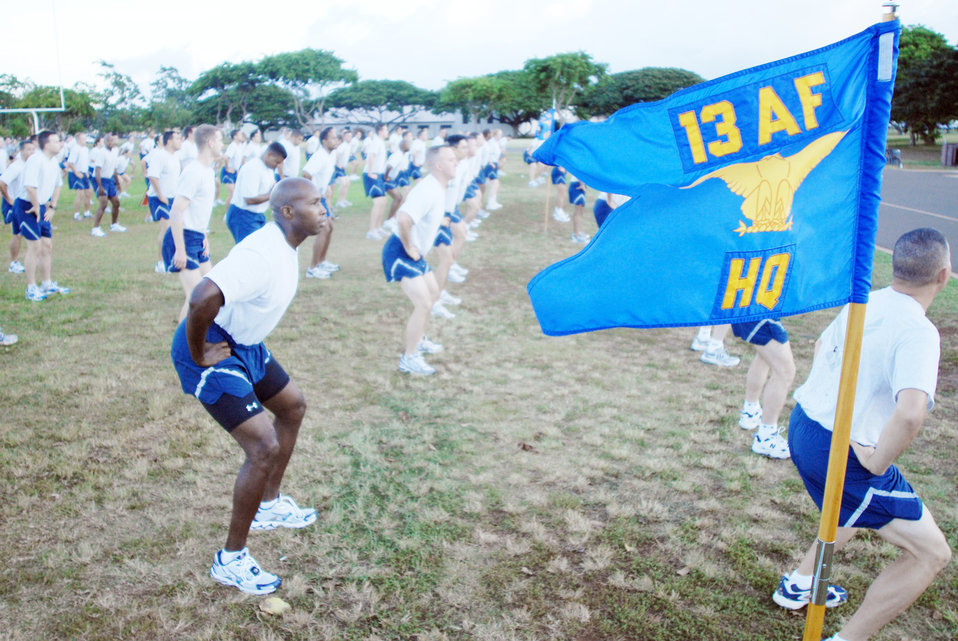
13th AF Jungle Day

Members of 13th Air Force warm up before a warrior run during Jungle Day Nov. 13, 2009, at Hickam Air Force Base, Hawaii. The Jungle Day tradition originated when the organization was assigned to Andersen Air Force Base, Guam, and gives 13th Air Force members a chance to have fun and give back to the local community.